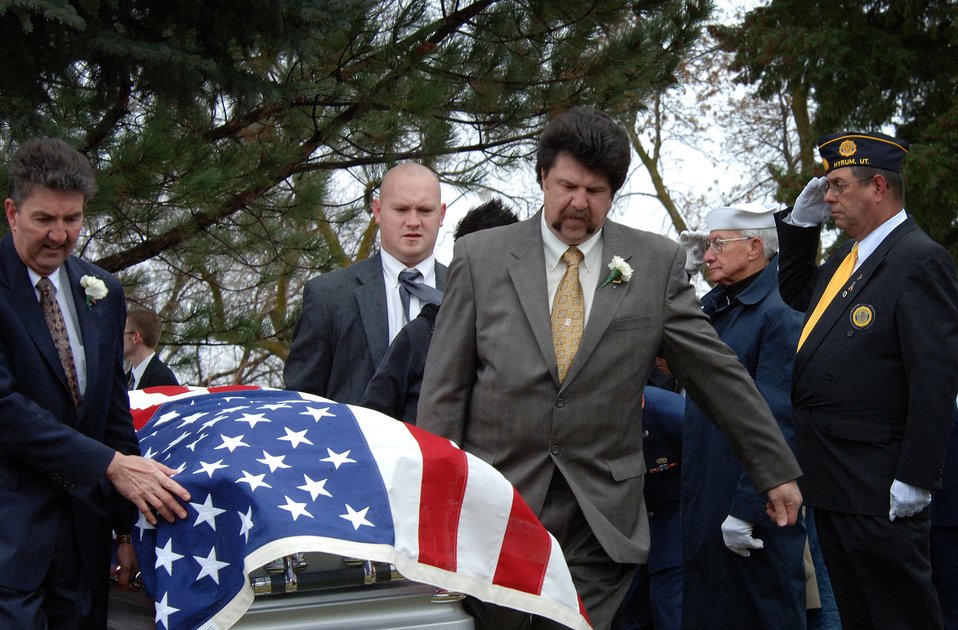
Lt. Col. Chase Nielsen service held March 28

Nielsen family members carry the body of deceased Lt. Colonel Chase J. Nielsen to his final resting place in the city cemetery of Hyrum, Utah March 28. Colonel Nielsen was one of the few remaining members of the famed Doolittle Raiders. The members of the Doolittle Raiders reached national acclaim in 1942 after launching the first successful aerial bombing raid on Tokyo, Japan as retaliation for the Japanese bombing of Pearl Harbor, Hawaii in December of 1941.